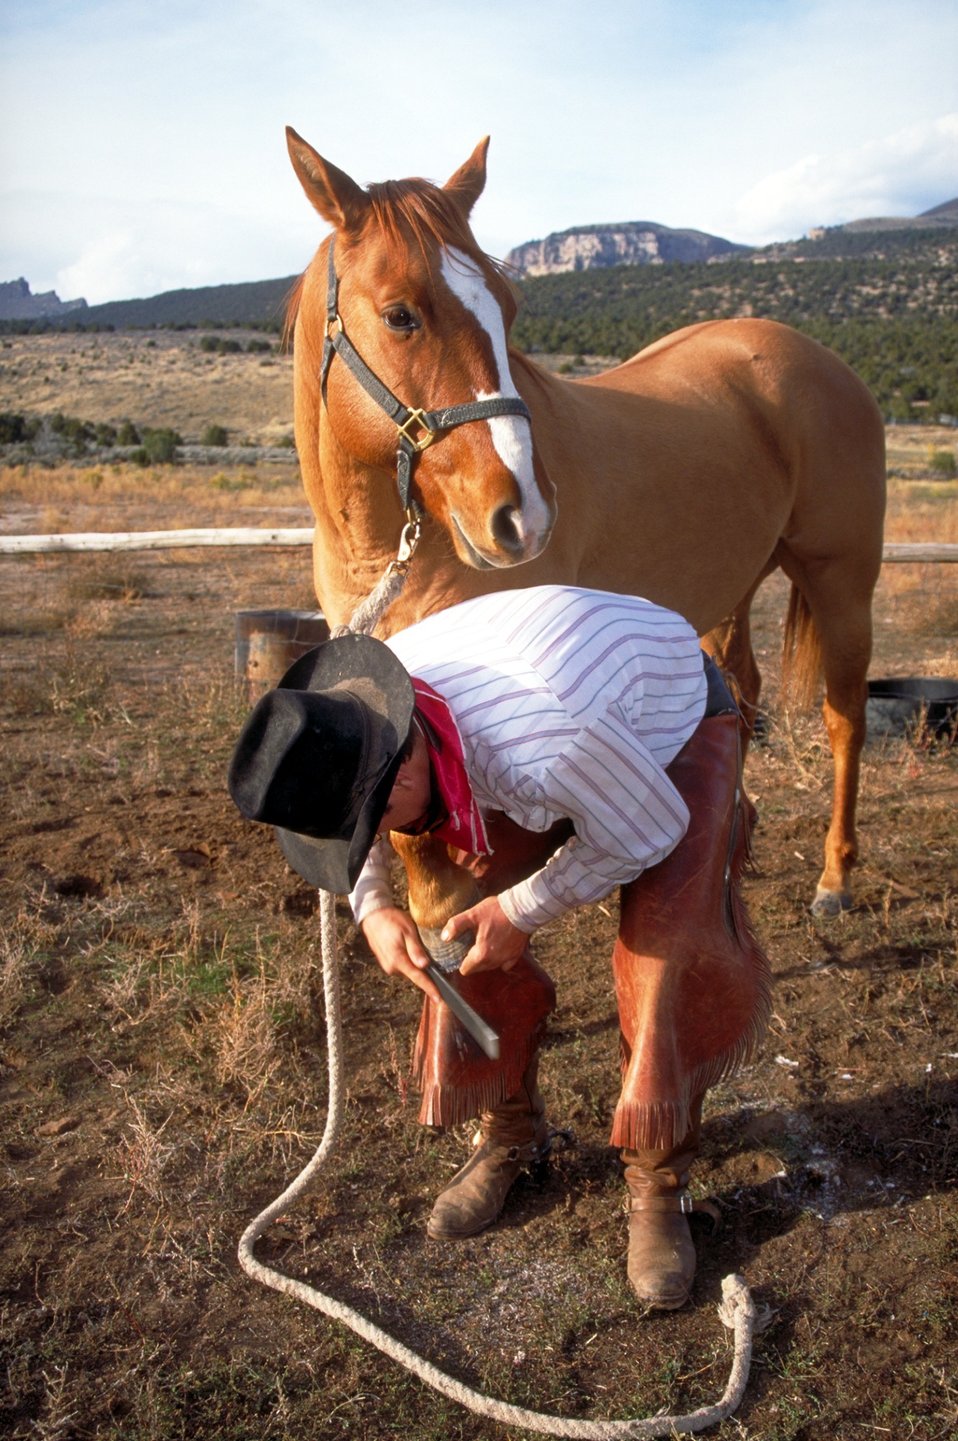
Working cowboys living near Vernal, Utah.